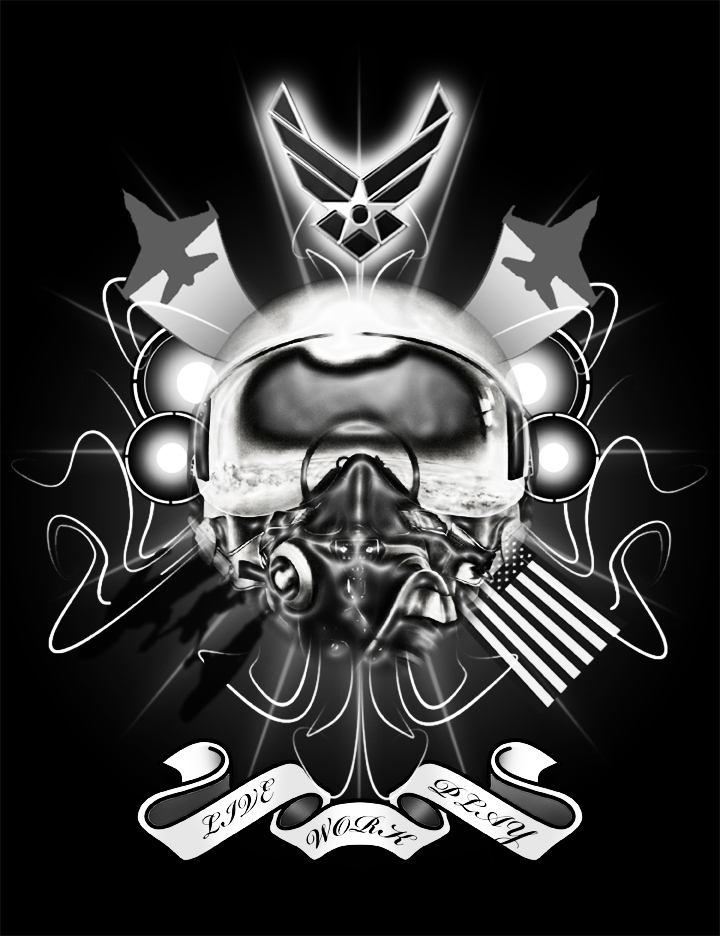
Deployed Airman wins design contest

Staff Sgt. Nathan Cruz's winning design for the MyAirForceLife.com T-shirt competition. Sergeant Cruz is a radio frequency technician from Robins Air Force Base, Ga.